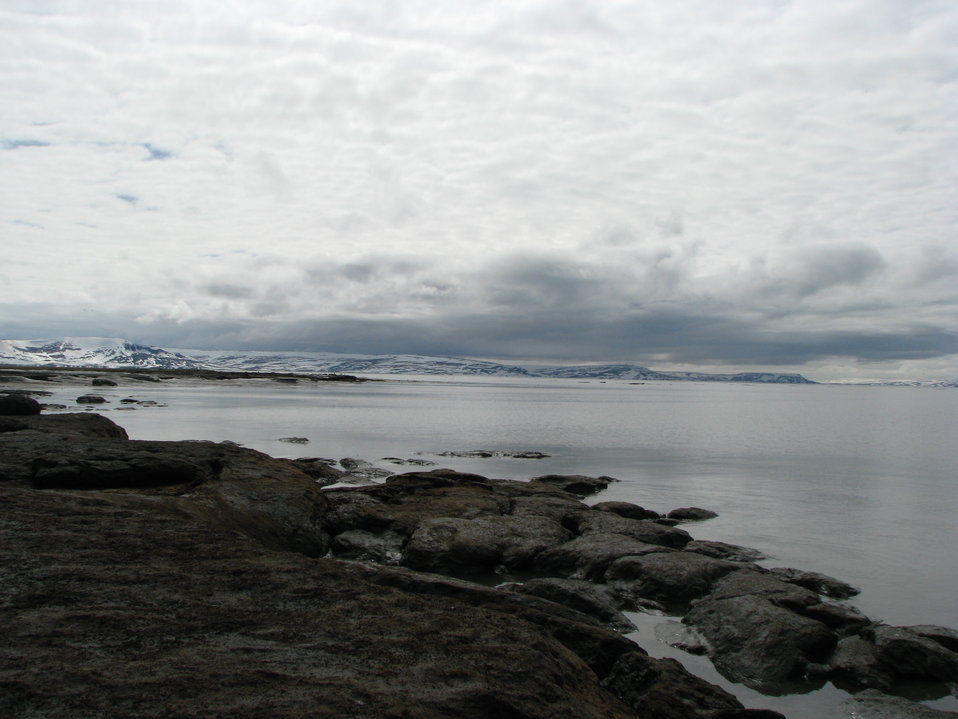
View from the coast of Yukon Delta NWR

Yukon Delta NWR